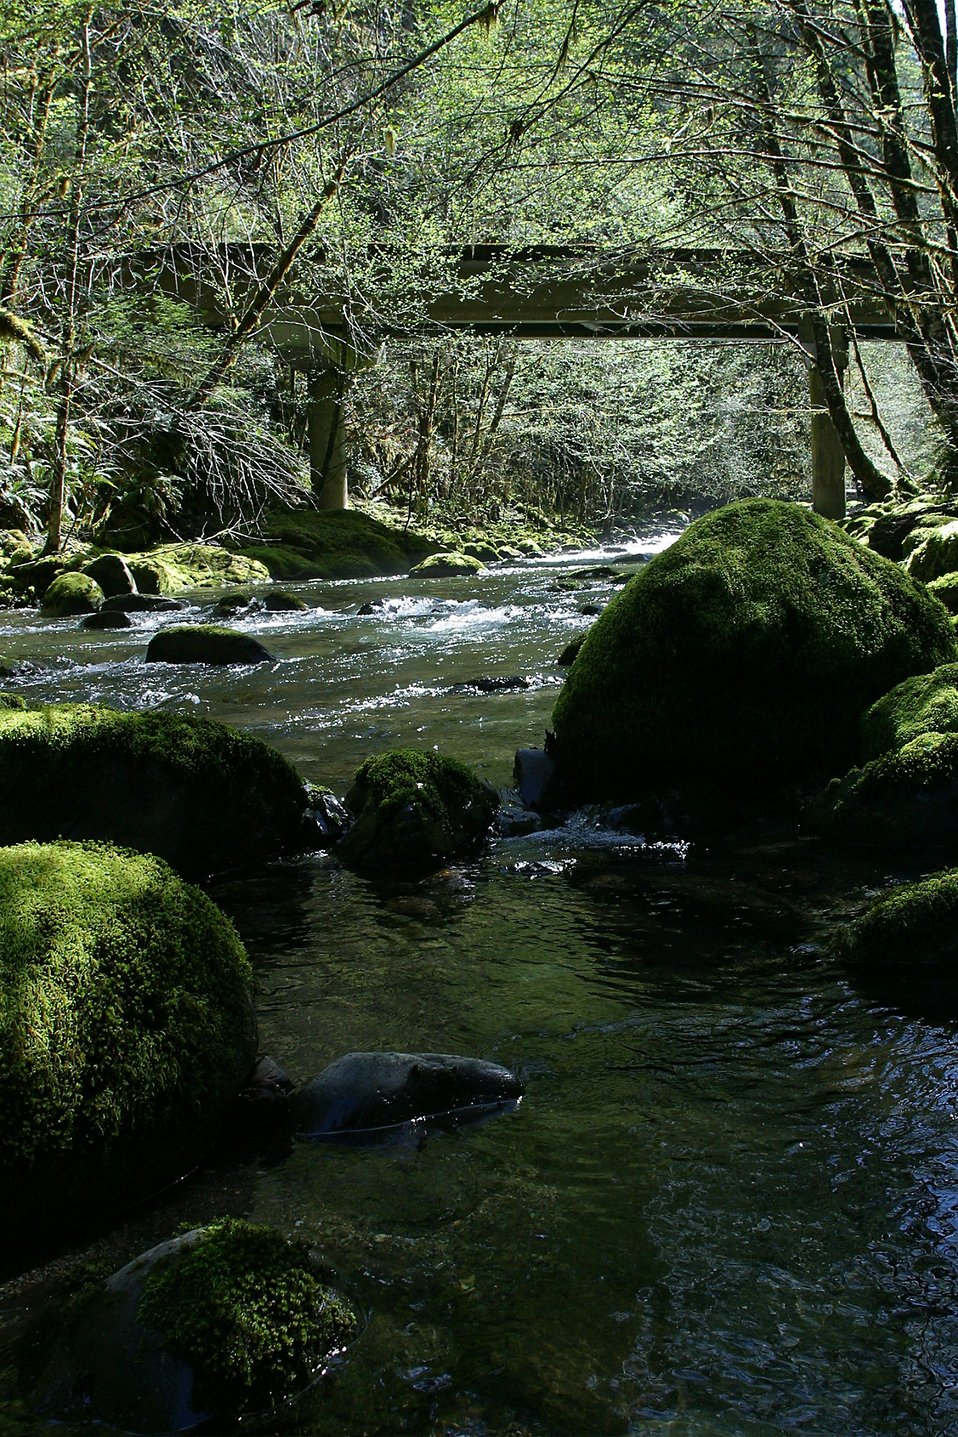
Little N. Fork Santiam River flows under the Lyons Bridge where theives removed aluminum gaurdrailing.